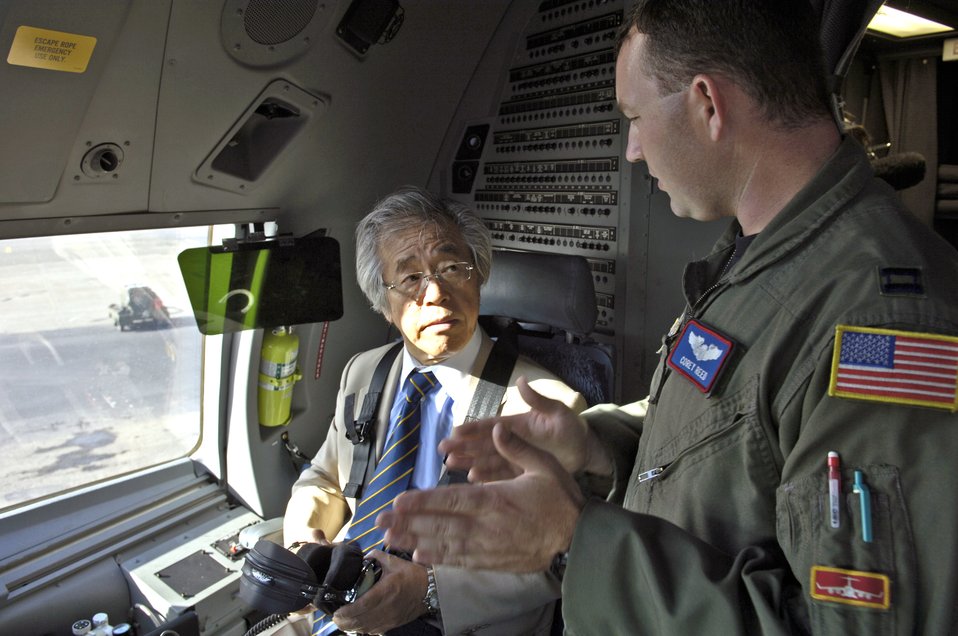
Air show to showcase C-17's capabilities

Capt. Corey Reed highlights the capabilities of the C-17 Globemaster III to Yoshiki Hidaka Sept. 27 at Hickam Air Force Base, Hawaii. Captain Reed is a pilot with 535th Airlift Squadron. Mr. Hidaka is the executive producer for